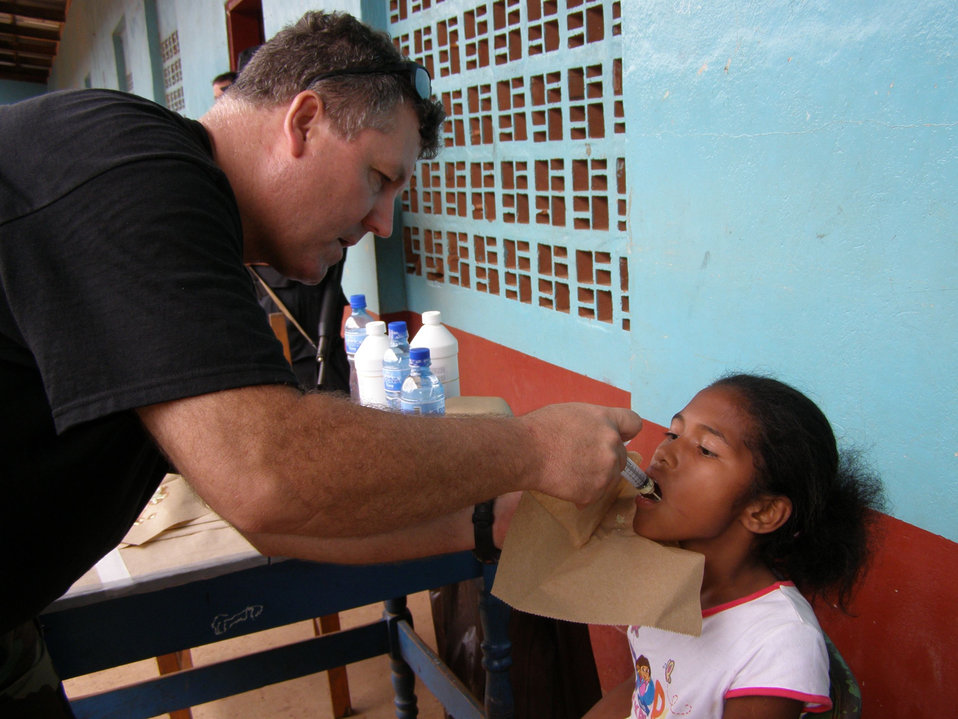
This image depicts Lt. Cmdr. Gary Brunette as he was in the process of administrating medicine to a young patient at a remote clinic in Nicaragua during Operation Continuing Promise (CP), 2008.